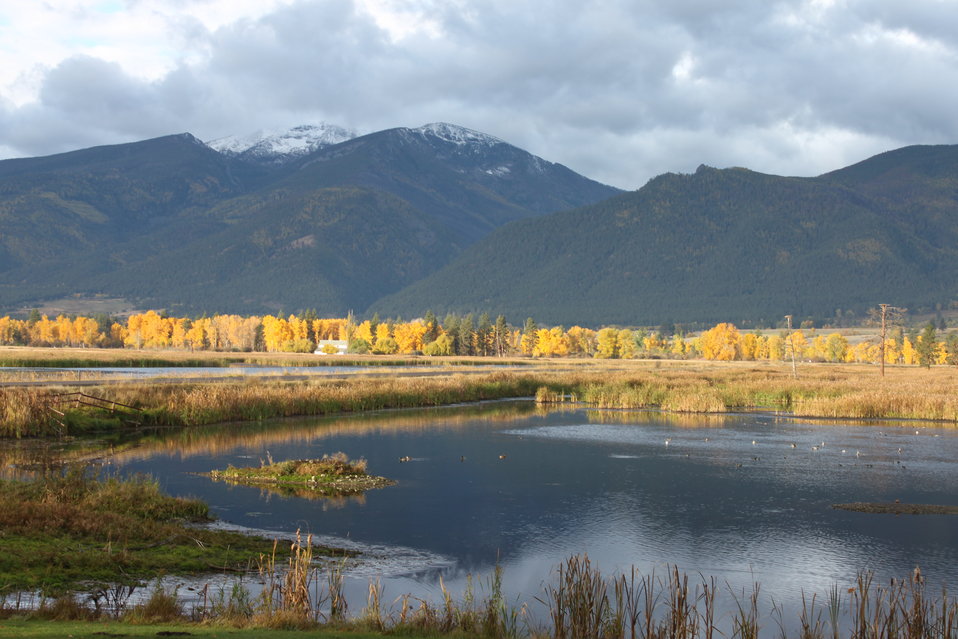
Pond 6

Fall colors along Bitterroot River observed from Refuge Headquarters.